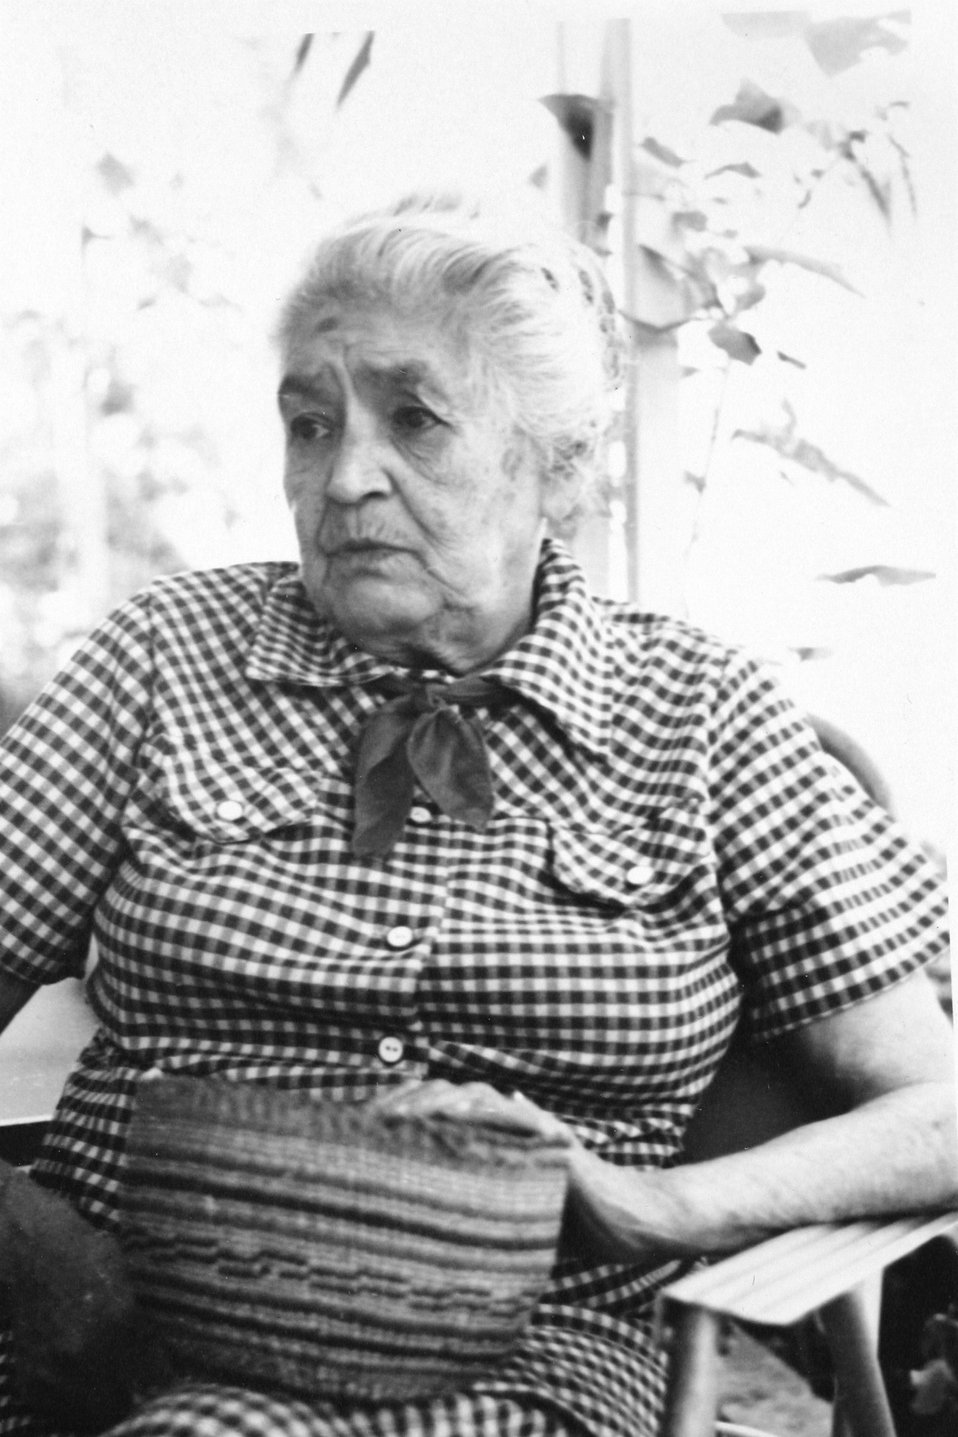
Marial Billings Akesson. C. 1977